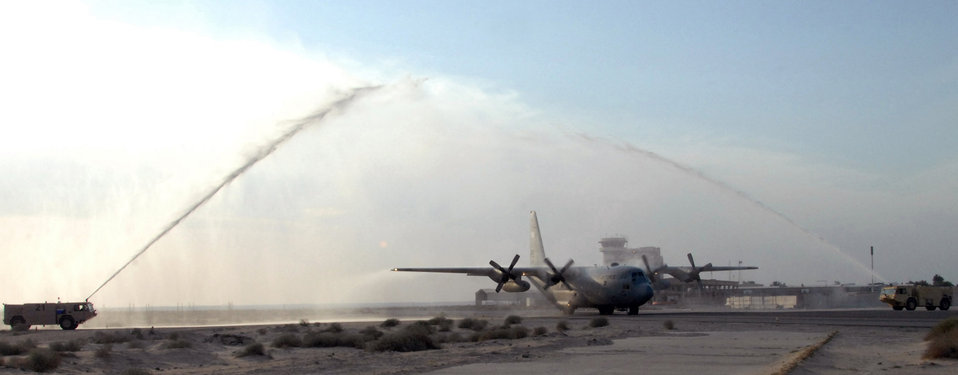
C-130 Final Flight

C-130 Hercules no. 1847 passes through the ceremonial water spray from two fire trucks at an air base in Southwest Asia after completing its final combat mission Jan. 28. After 47 years of service, the aircraft is being retired.